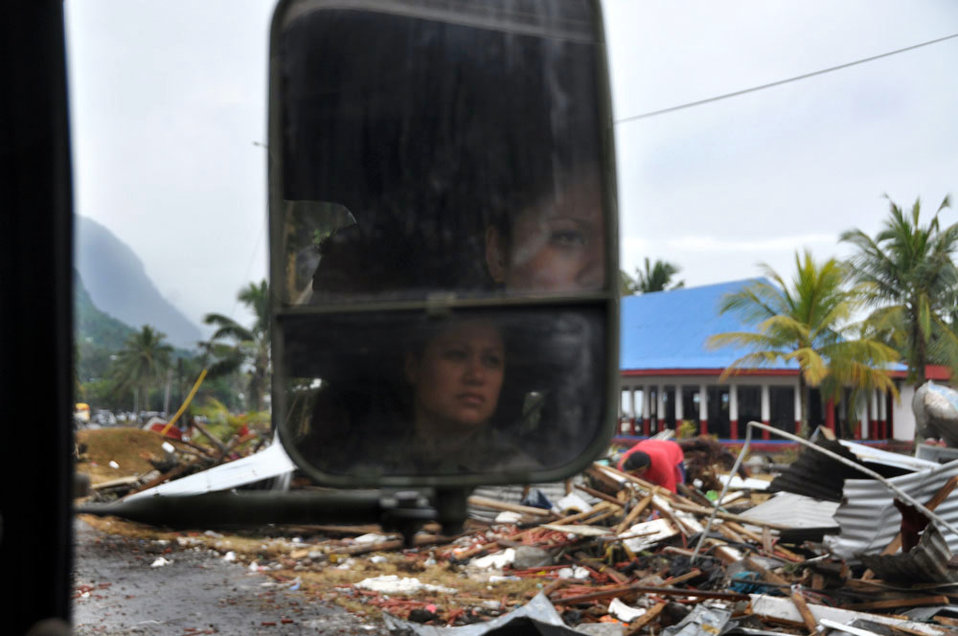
Hawaii Air Guard doctor details American Samoa recovery effort

Tech. Sgt. Carissa Maxson studies the shoreline of Pago Pago, American Samoa, Oct. 1, 2009, while conducting assessments of the area after a tsunami stuck there Sept. 29. Sergeant Maxson is with the Air National Guard's 154th Medical Group's chemical, biological, radiological/nuclear and explosives enhanced response force package.